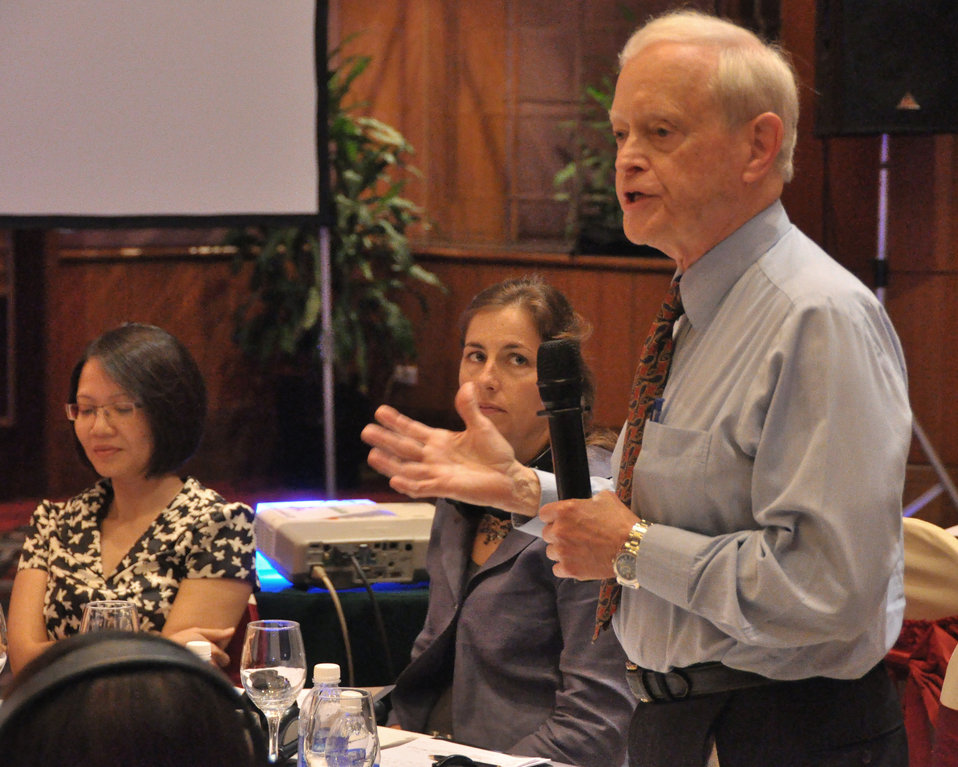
USAID's Support for Trade Acceleration Project (USAID STAR Plus) Closing Ceremony

Hanoi, August 26, 2013.